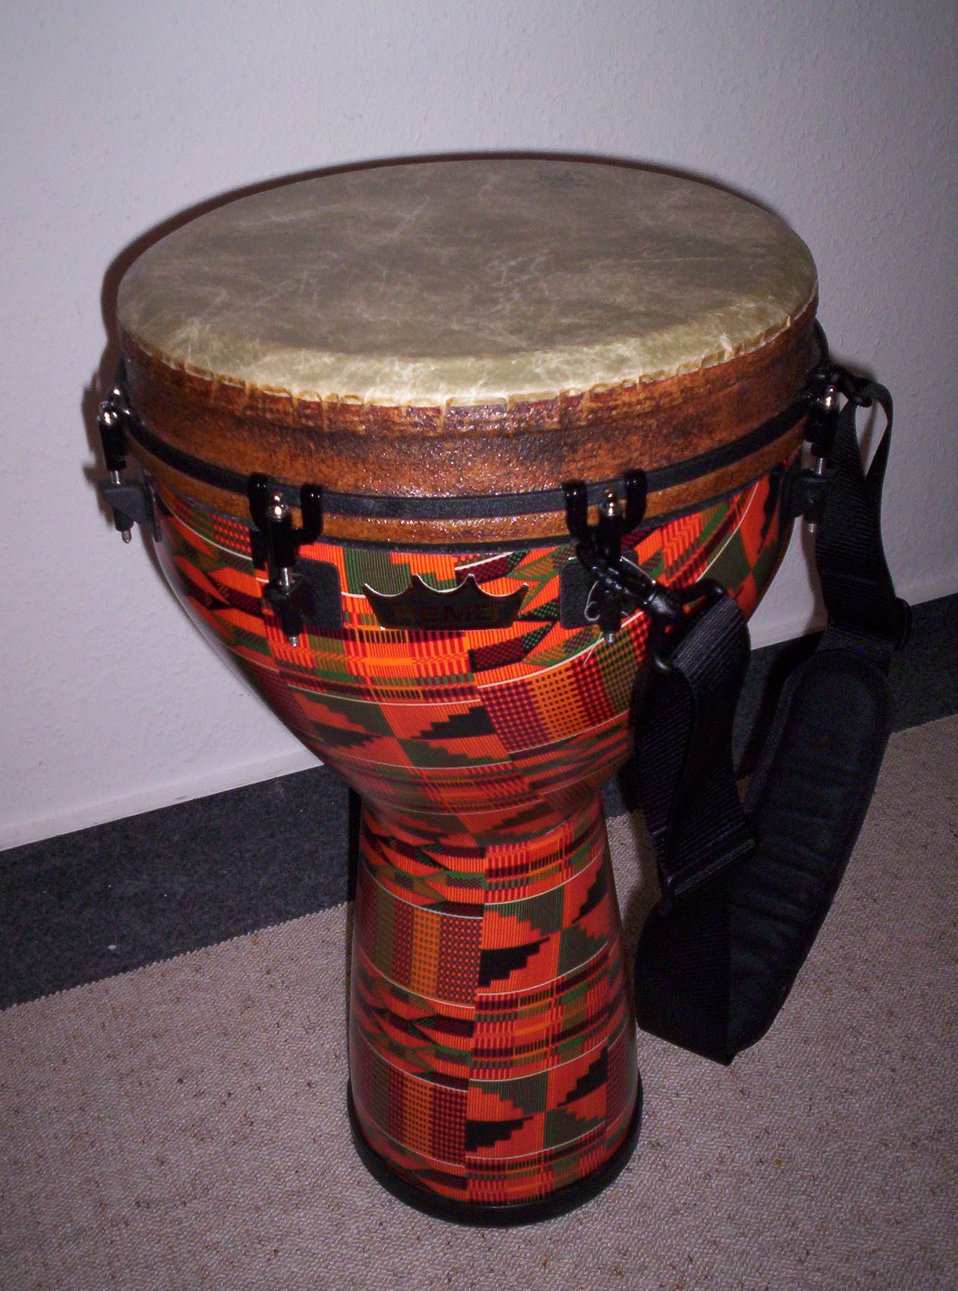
Moderne Djembe der Firma REMO gefertigt aus einem Pflanzenfaser-Kunstharz-Gemisch mit Tragegurt